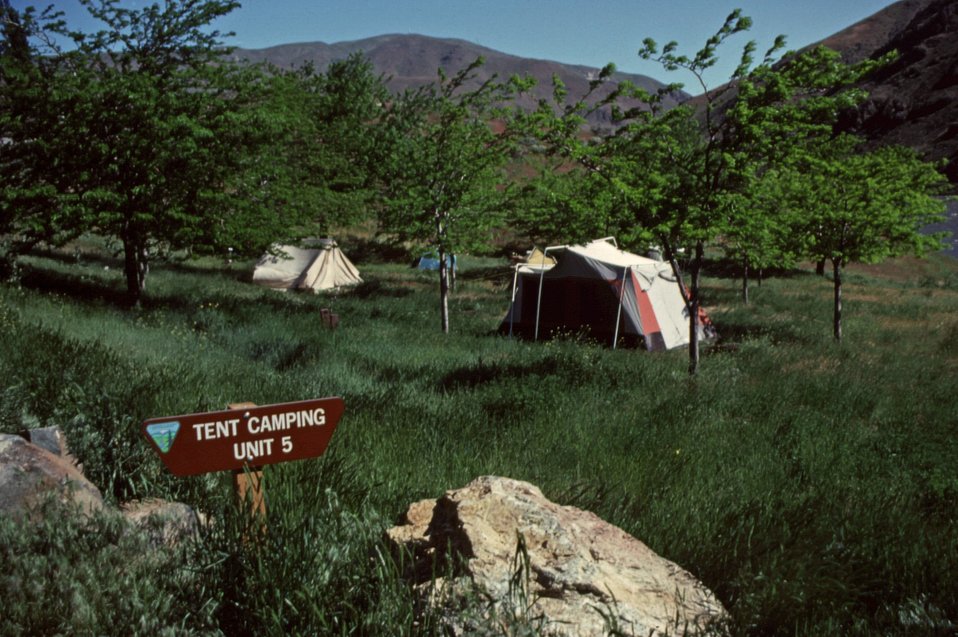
Spring Recreation site tent camping units on the BLM Vale District in eastern Oregon.